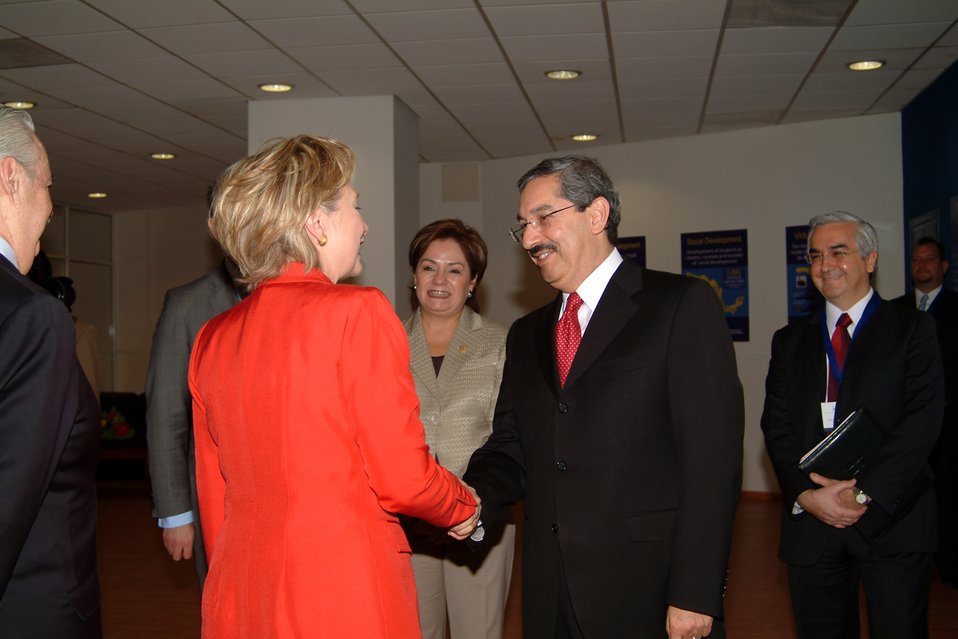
Secretary Clinton at TecMilenio University

U.S. Secretary of State Hillary Rodham Clinton at Secretary Clinton at TecMilenio University in Monterrey, Mexico March 26, 2009.